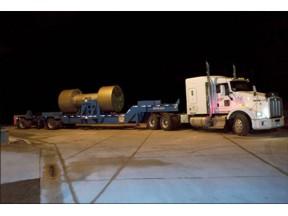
Remote-Handled Transuranic Waste Shipment

The first Remote-Handled Transuranic Waste Shipment to the Waste Isolation Pilot Plant in Carlsbad, NM.